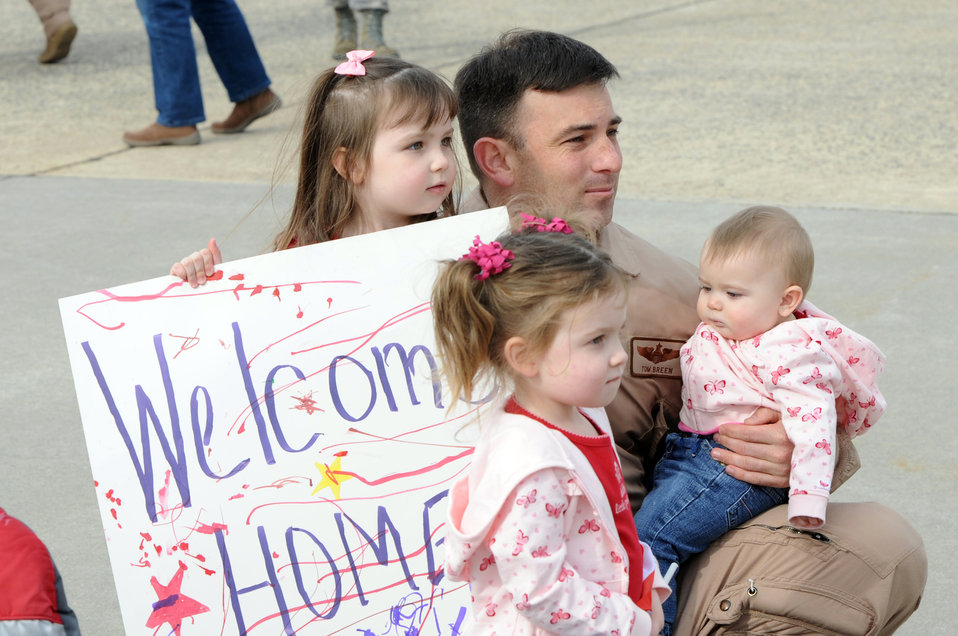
McGuire Airmen return from deployment

Maj. Tom Breen reunites with daughters Nicole (left to right), Audrey and Tori, after a four-month deployment in support of operations Iraqi Freedom and Enduring Freedom March 2, 2010, at Joint Base McGuire-Dix-Lakehurst, N.J. Major Breen is a 6th Airlift Squadron C-17 Globemaster III pilot.